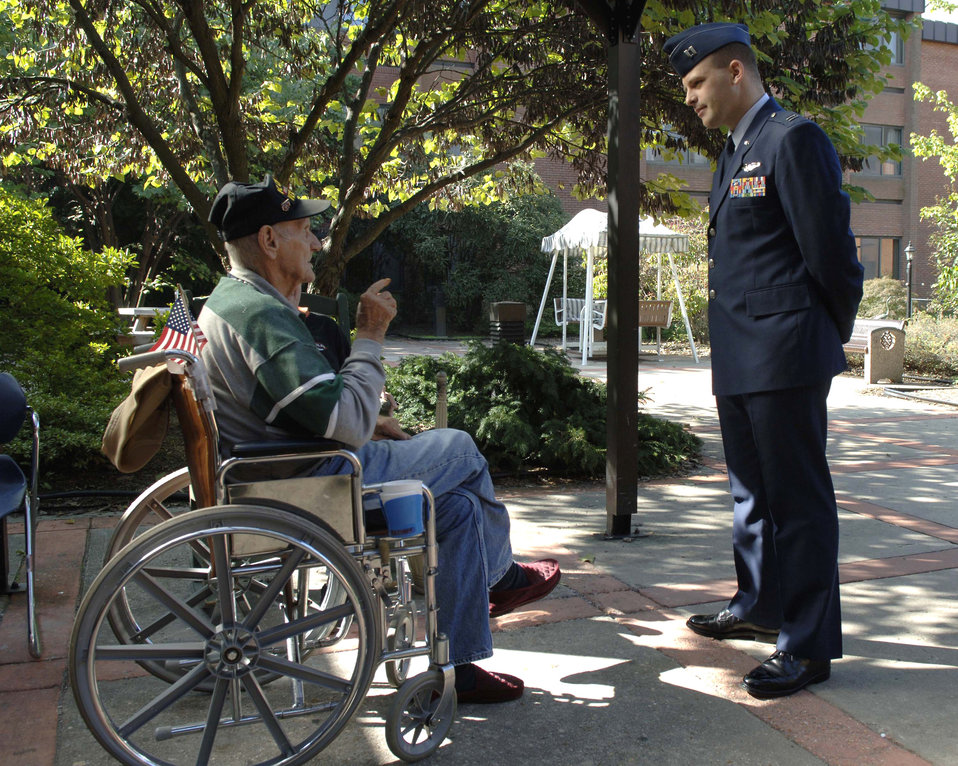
Airmen visit, share stories with veterans

Retired Marine Staff Sgt. Edward Mahilik and Capt. Ryan Campbell talk about Mr. Mahilik's time in the service during the Korean War. Airmen from Andrews Air Force Base, Md., visited Charlotte Hall Veterans Home in Charlotte Hall, Md., Sept. 18. Captain Campbell is commander of the 1st Helicopter Squadron Training Flight at Andrews.